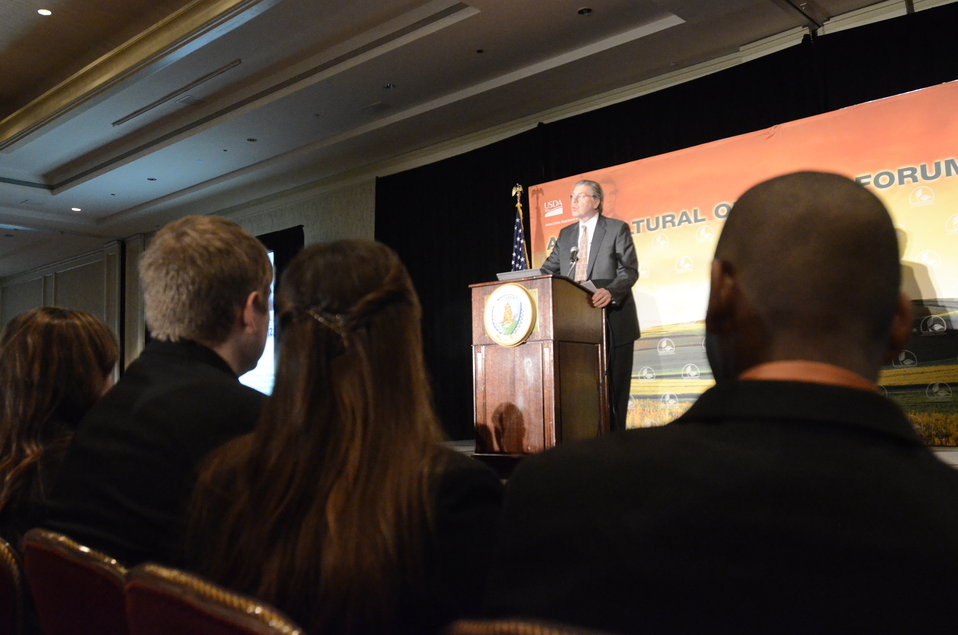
At the 2012 Agricultural Outlook Forum, “Moving Agriculture Forward” in Arlington, VA, held on Thursday, February 23, 2012. Chief Economist Joseph Glauber makes opening remarks at the conference.